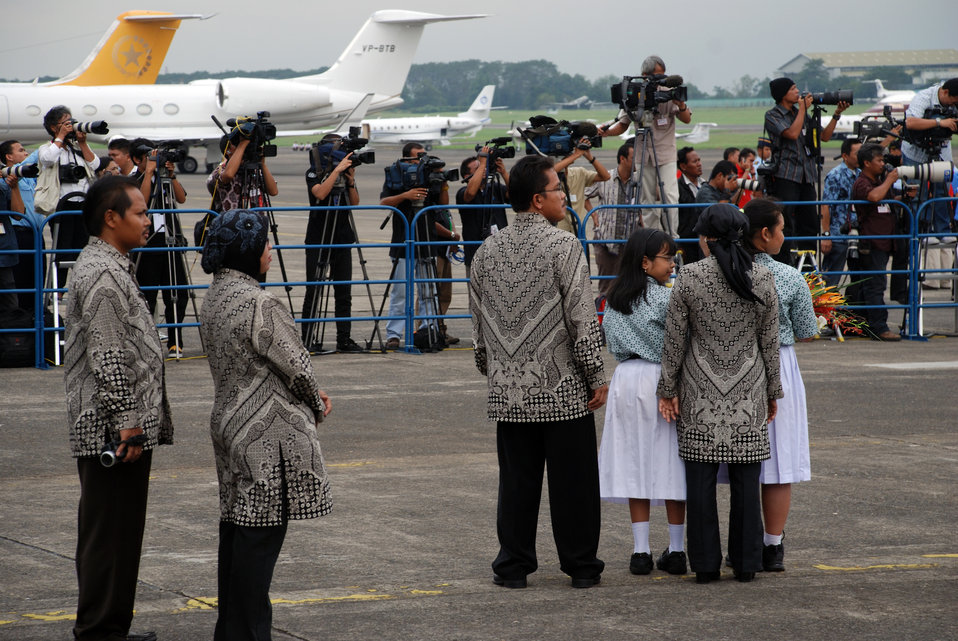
Behind the Scenes: Indonesian Students Prepare for Secretary Clinton's Arrival

Mr. Edy, Ms. Zubaidah, Mr. Solikhin (Vice Principal), Sheila, Ms.
Hasimah (Principal), and Kei ready to greet Secretary Clinton and
present flowers Television crew interviews students of Menteng Elementary School No. 1 at
Halim Airport before U.S. Secretary of State Hillary Rodham Clinton arrives in Jarkarta, Indonesia during her visit February 18, 2009.